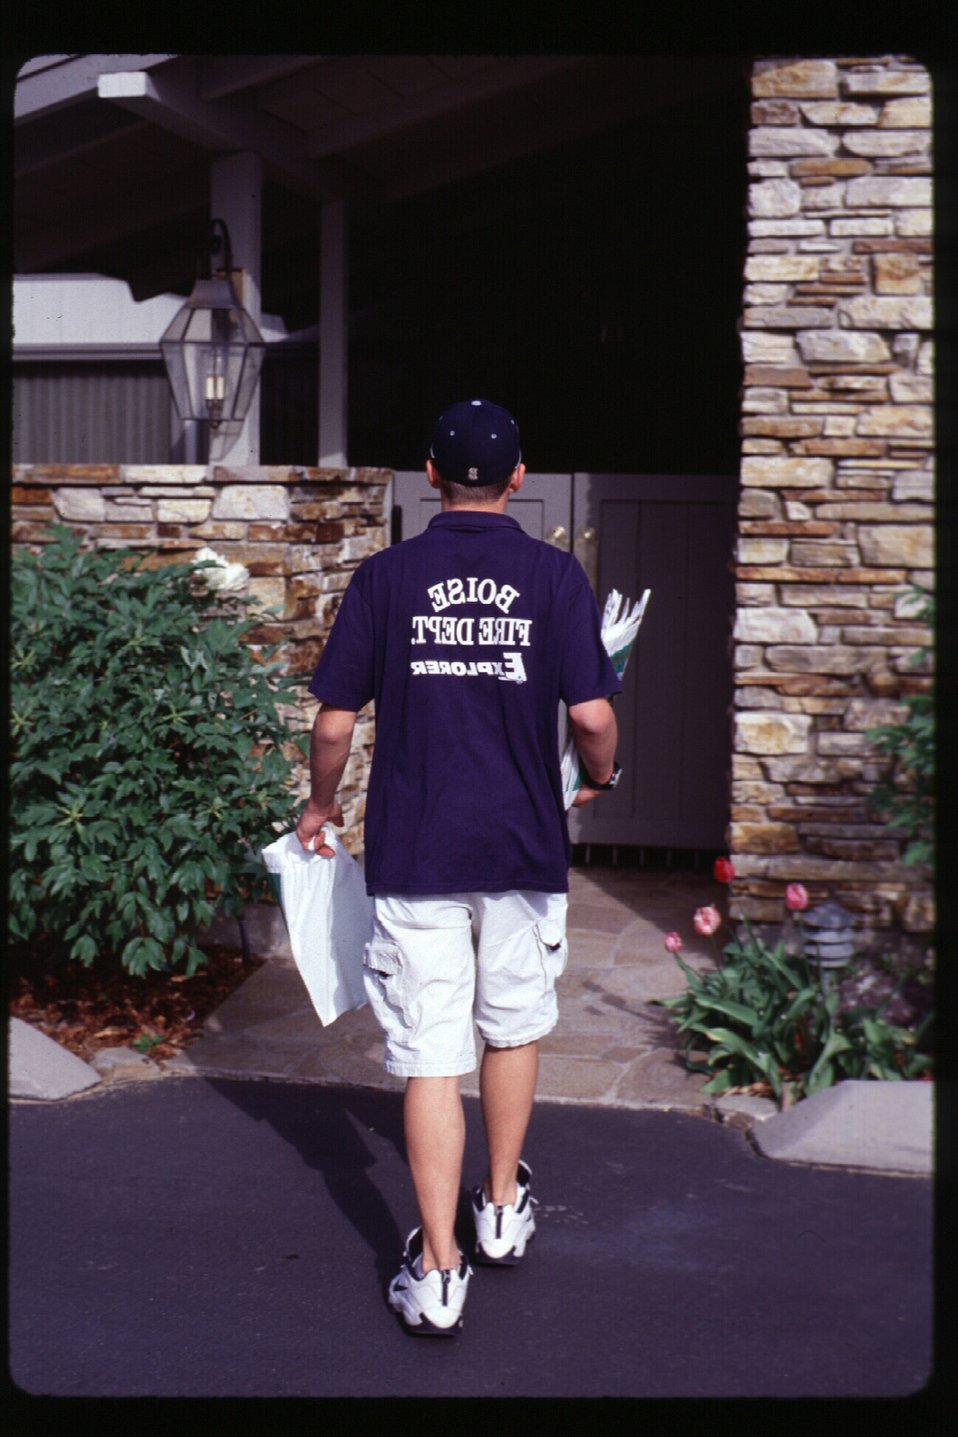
Urban interface Four Rivers Field Office LSRD Lower Snake River District